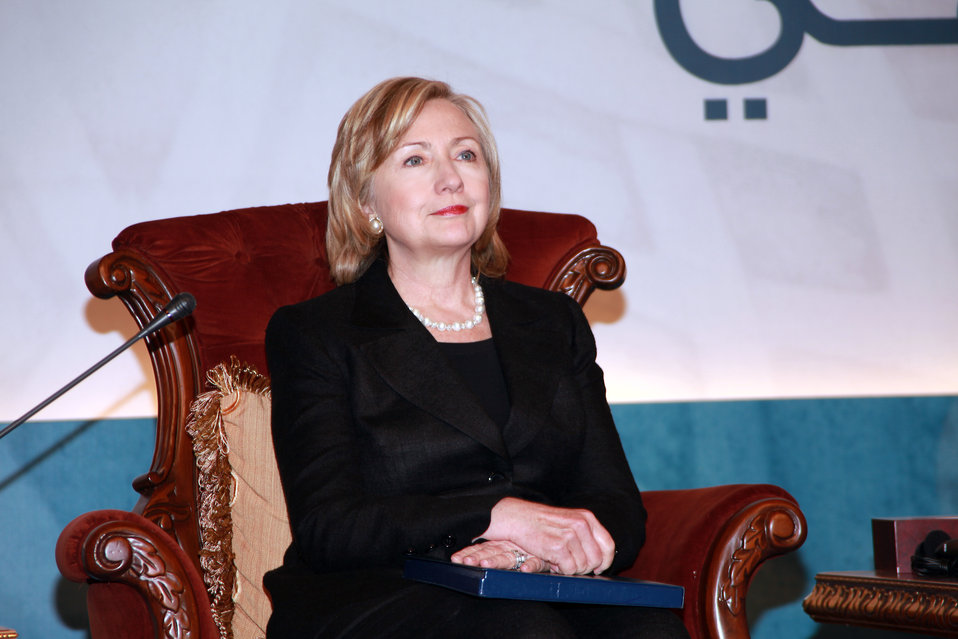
Secretary Clinton Travels to Qatar and Saudi Arabia

U.S. Secretary of State Hillary Rodham Clinton takes questions at the U.S. Islamic World Forum at the Sheraton Hotel in Doha, Qatar February 14, 2010.